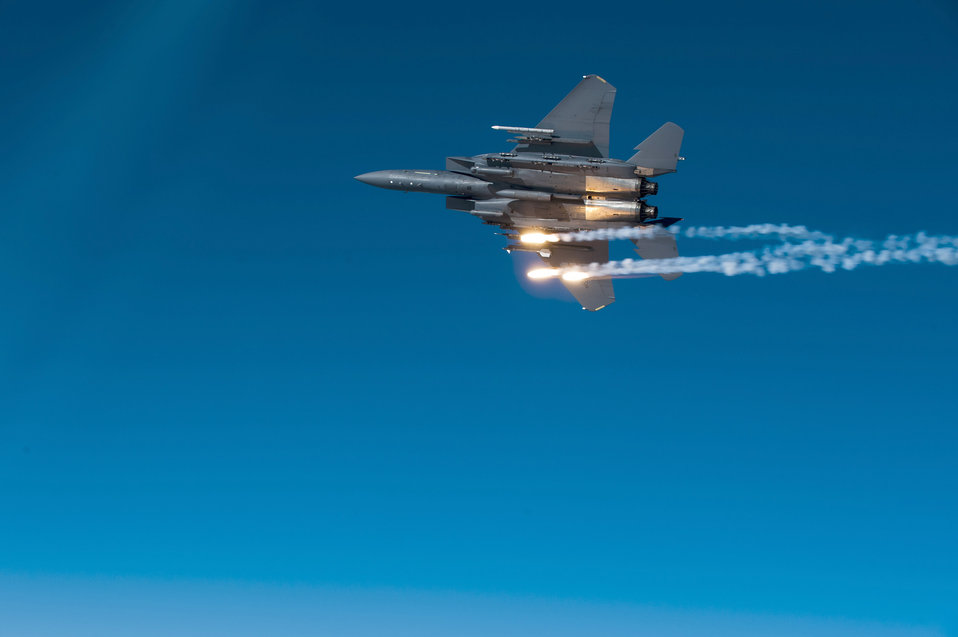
F-15s training mission

Flares are released from an F-15E Strike Eagle during a local training mission Dec. 17, 2010, over North Carolina. The F-15E is from the 335th Fighter Squadron from Seymour Johnson Air Force Base, N.C.